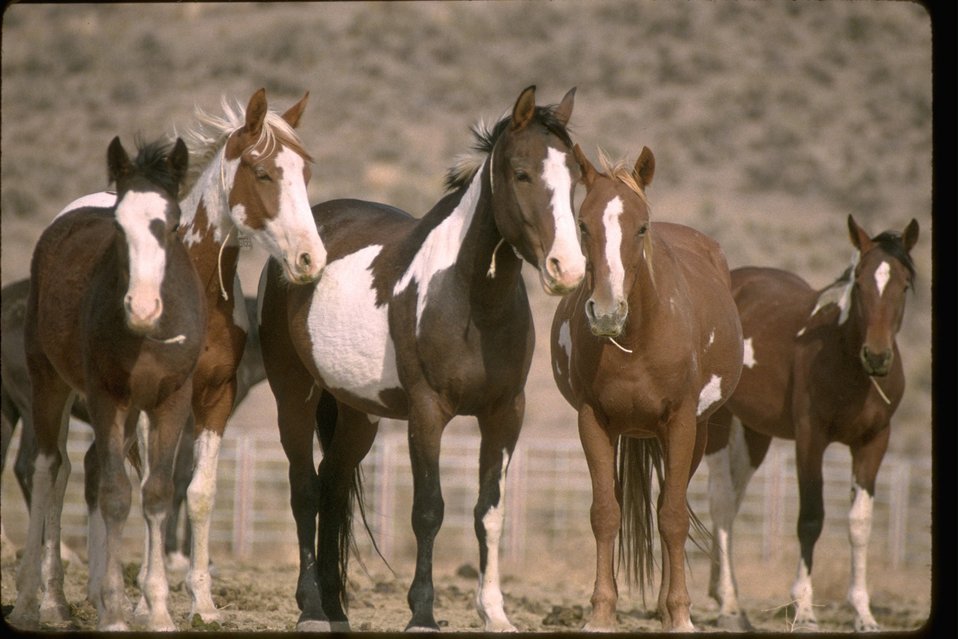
South Steens Wild Horses await adoption at Burns Wild Horse Corrals, Oregon.